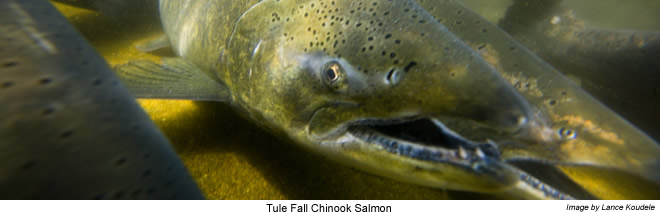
Tule Fall Chinook Salmon